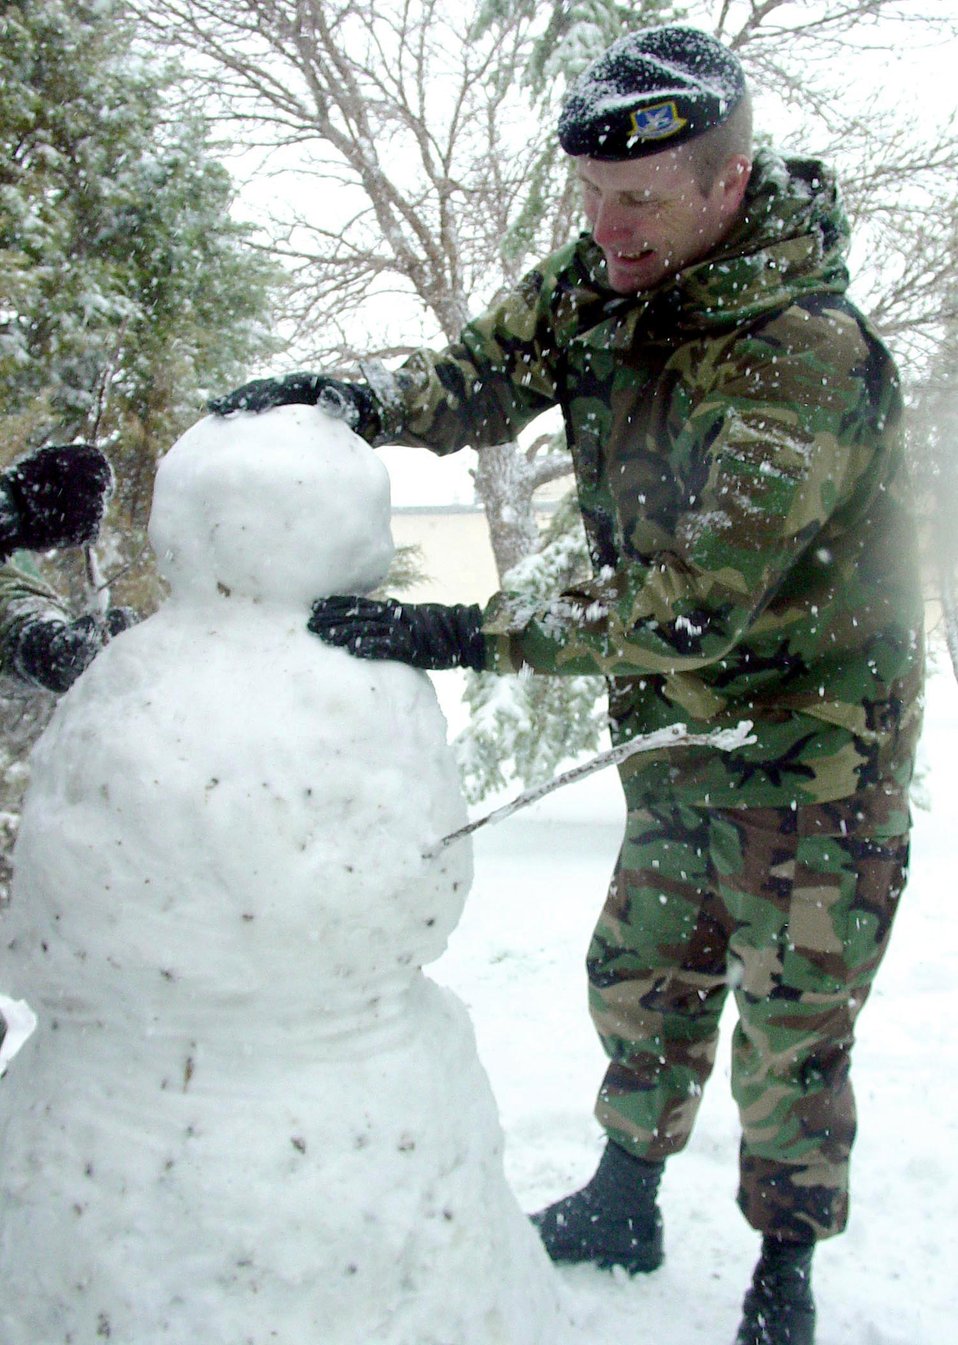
Snow day in May?

MINOT AIR FORCE BASE, N.D. -- Master Sgt. Tim Allen builds a snowman outside the wing headquarters building here May 12. A storm left more than 2 inches of snow. Sergeant Allen is the noncommissioned officer in charge of anti-terrorism and force protection for the 5th Bomb Wing.